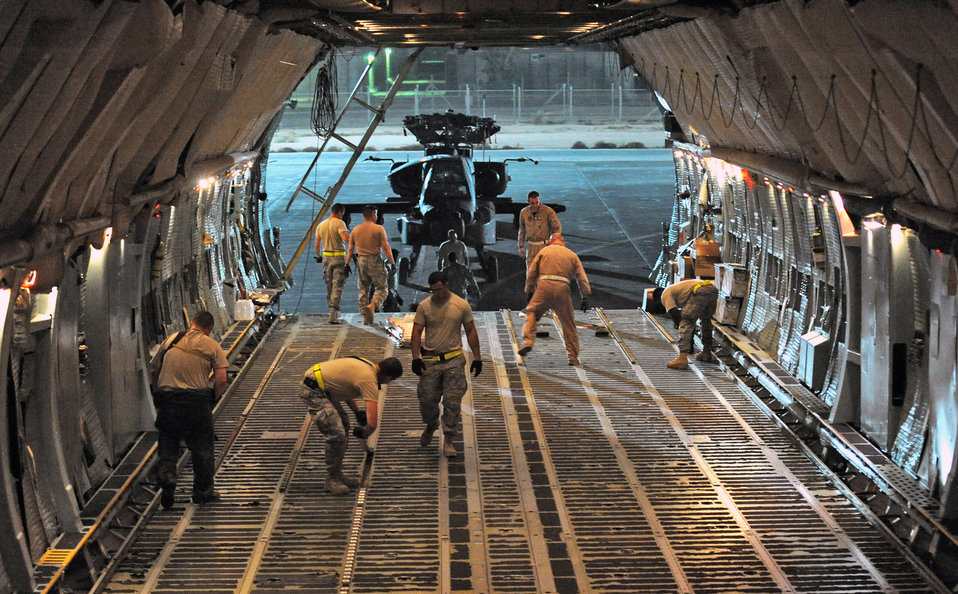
Getting ready for a special passenger

Airmen from the 332nd Expeditionary Logistics Readiness Squadron at Joint Base Balad, Iraq, and the aircrew of a C-5 Galaxy reconfigure the aircraft June 8 in preparation to loading a helicopter on board. The C-5 Galaxy is one of the largest military aircraft in the world.